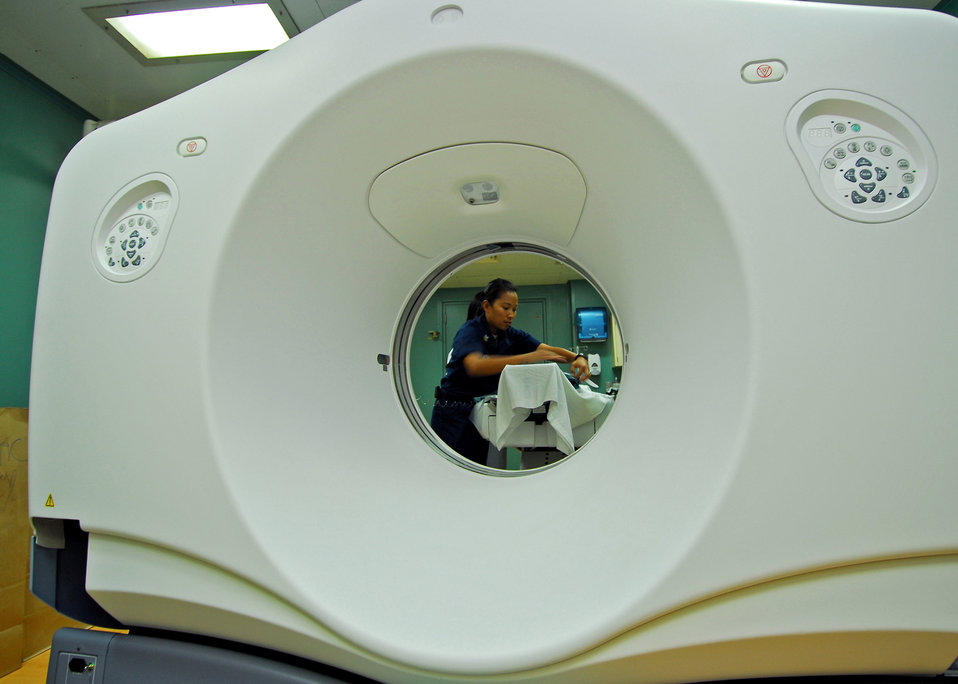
Hospital Corpsman 1st Class Haschke Conducts a 'CAT' scan for a Patient

Hospital Corpsman 1st Class Eiyeen Haschke conducts a “cat” scan for a patient aboard the Military Sealift Command hospital ship USNS Mercy (T-AH 19) in support of Pacific Partnership 2010 on July 30, 2010. Mercy is in Ambon, Indonesia, participating in Sail Banda 2010. Mercy’s participation features medical and dental care clinics and construction projects in and around Ambon, as well as on Seram Island.